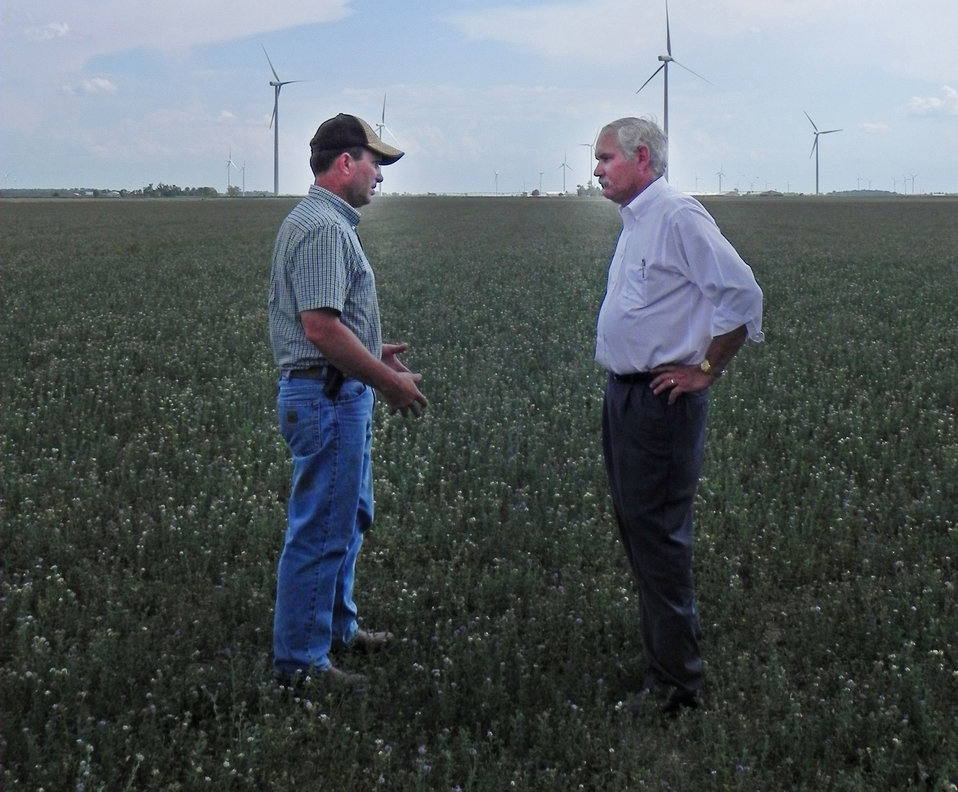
Roy Klopfenstein (left) and Agriculture Under Secretary for Farm and Foreign Agricultural Service (FFAS) Michael Scuse (right) look at Klopfenstein’s alfalfa field and how the drought has impacted his crop in Paulding County OH on Tuesday, July 17, 2012. Agriculture Secretary Vilsack has instructed Agriculture subcabinet leaders to travel to affected drought areas to augment ongoing assistance from state-level U.S. Department of Agriculture (USDA) staff and provide guidance on USDA’s new, streamlined disaster process. The U.S. Drought Monitor currently reports that 61 percent of the continental United States is in a moderate to exceptional drought.